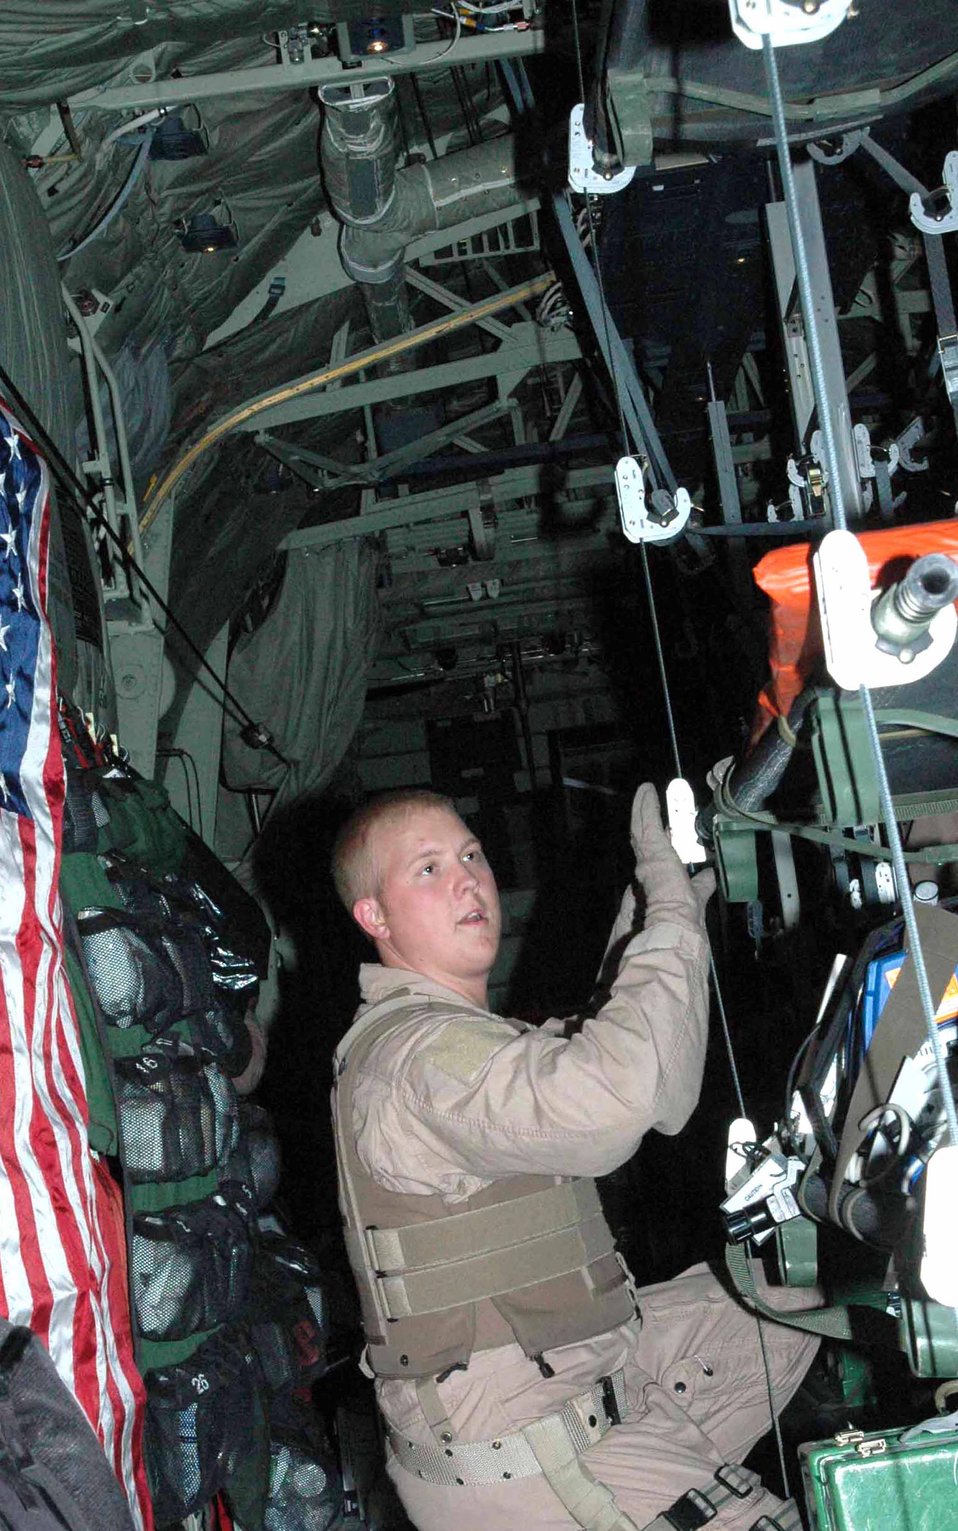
Out of harm's way

Tech. Sgt. Ken Bullock prepares litters to receive patients on board a C-130J Hercules April 2 over Iraq. He was part of a five-stop combat aeromedical evacuation mission. Crew members on- and off-loaded 19 patients, most of whom were ambulatory, to get them to medical care either in Southwest Asia or in Germany via Kuwait. Sergeant Bullock is a 379th Expeditionary Aeromedical Evacuation Squadron second medical technician and an Air National Guard member deployed here from the 183rd Aeromedical Evacuation Squadron in Jackson, Miss.